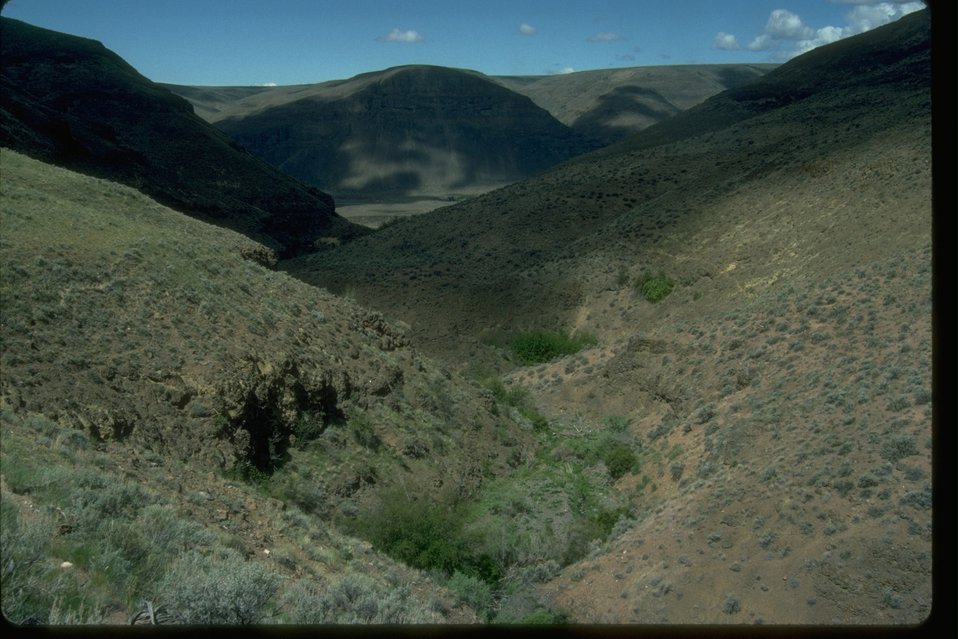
Petrified Canyon in Moses Coulee, Grant County, Washington